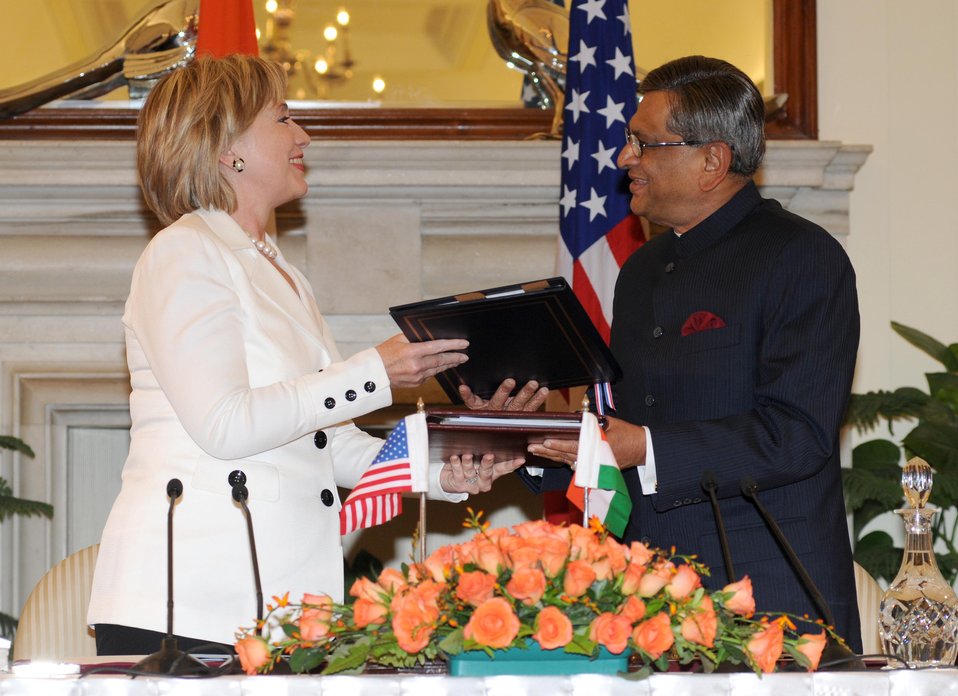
U.S., India Sign Bilateral Science and Technology Endowment Agreement

U.S. Secretary of State Hillary Rodham Clinton and Indian Minister of External Affairs S.M. Krishna after signing of a U.S.-India bilateral science and technology endowment agreement in New Delhi, India July 20, 2009.